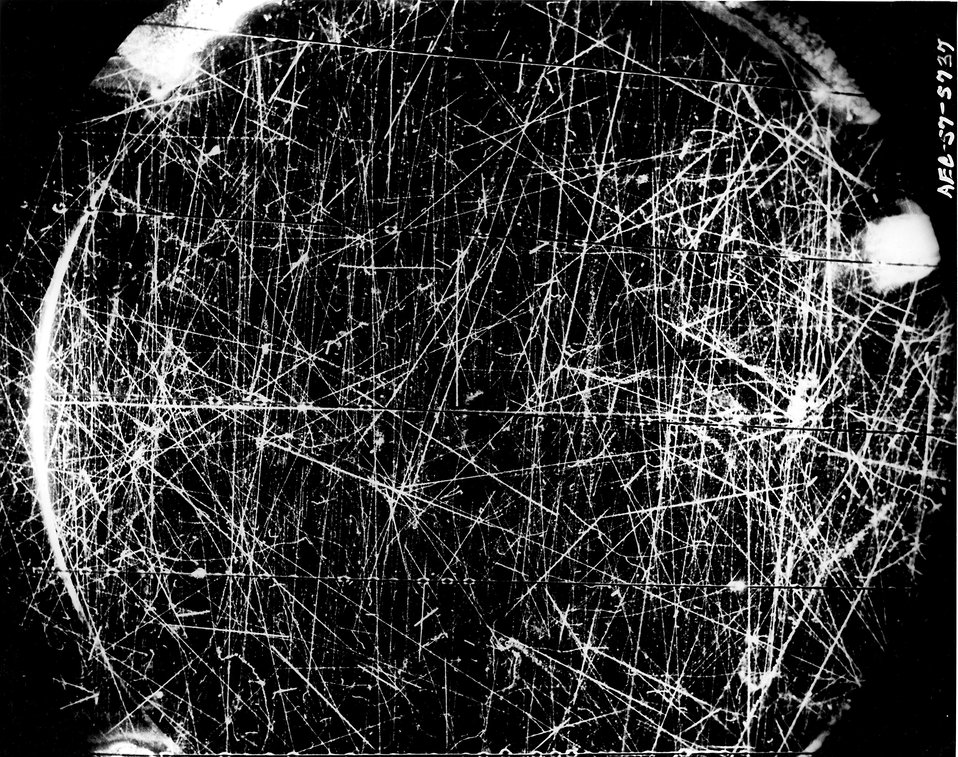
Billion-volt atomic particles in Brookhaven Cosmotron. c. 1957